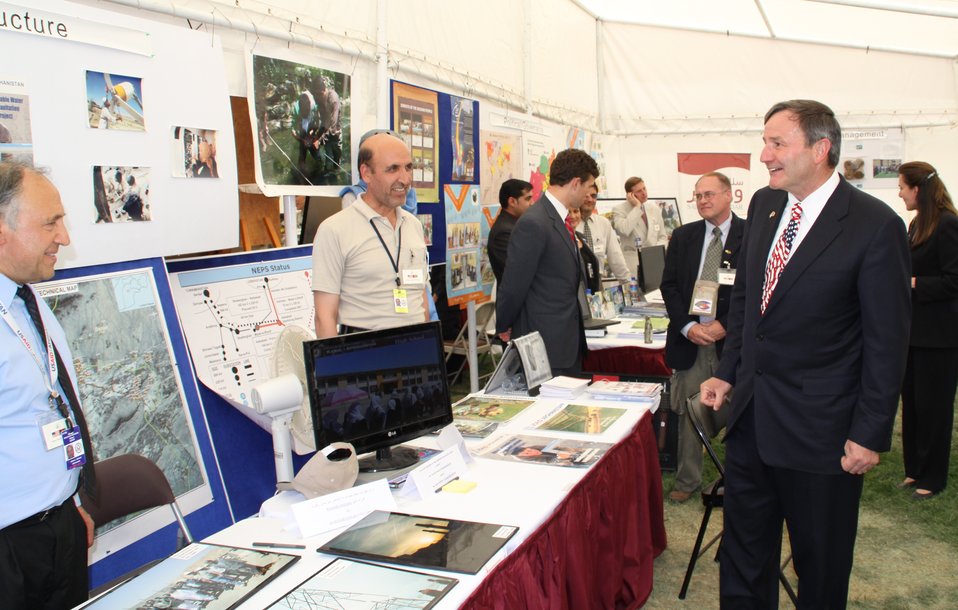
Kabul Official July 4th Celebration